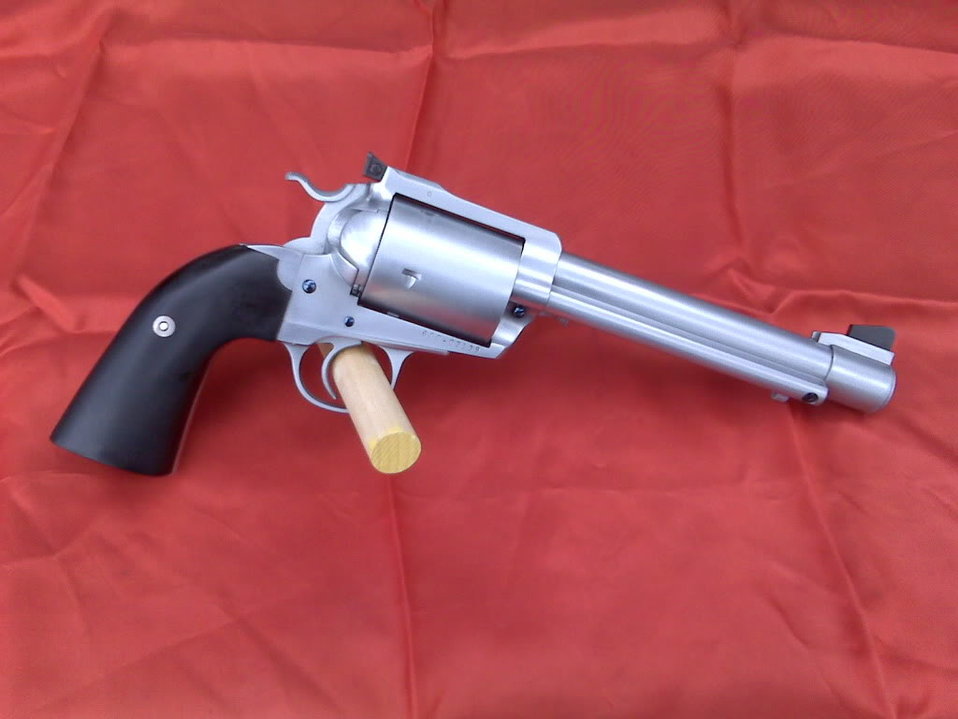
Jack Huntington .500 Maximum